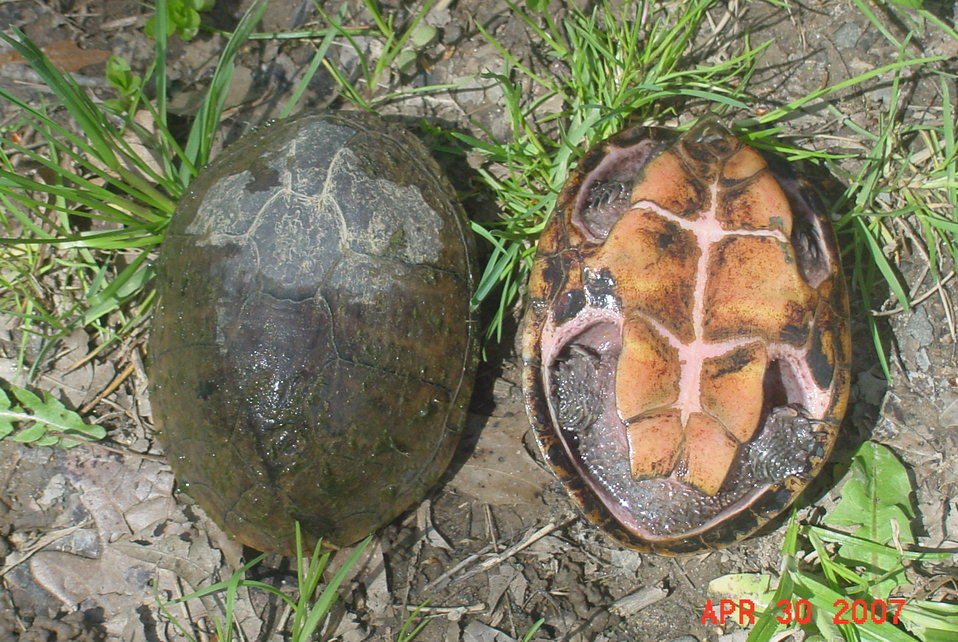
Common musk turtles at Great Swamp National Wildlife Refuge